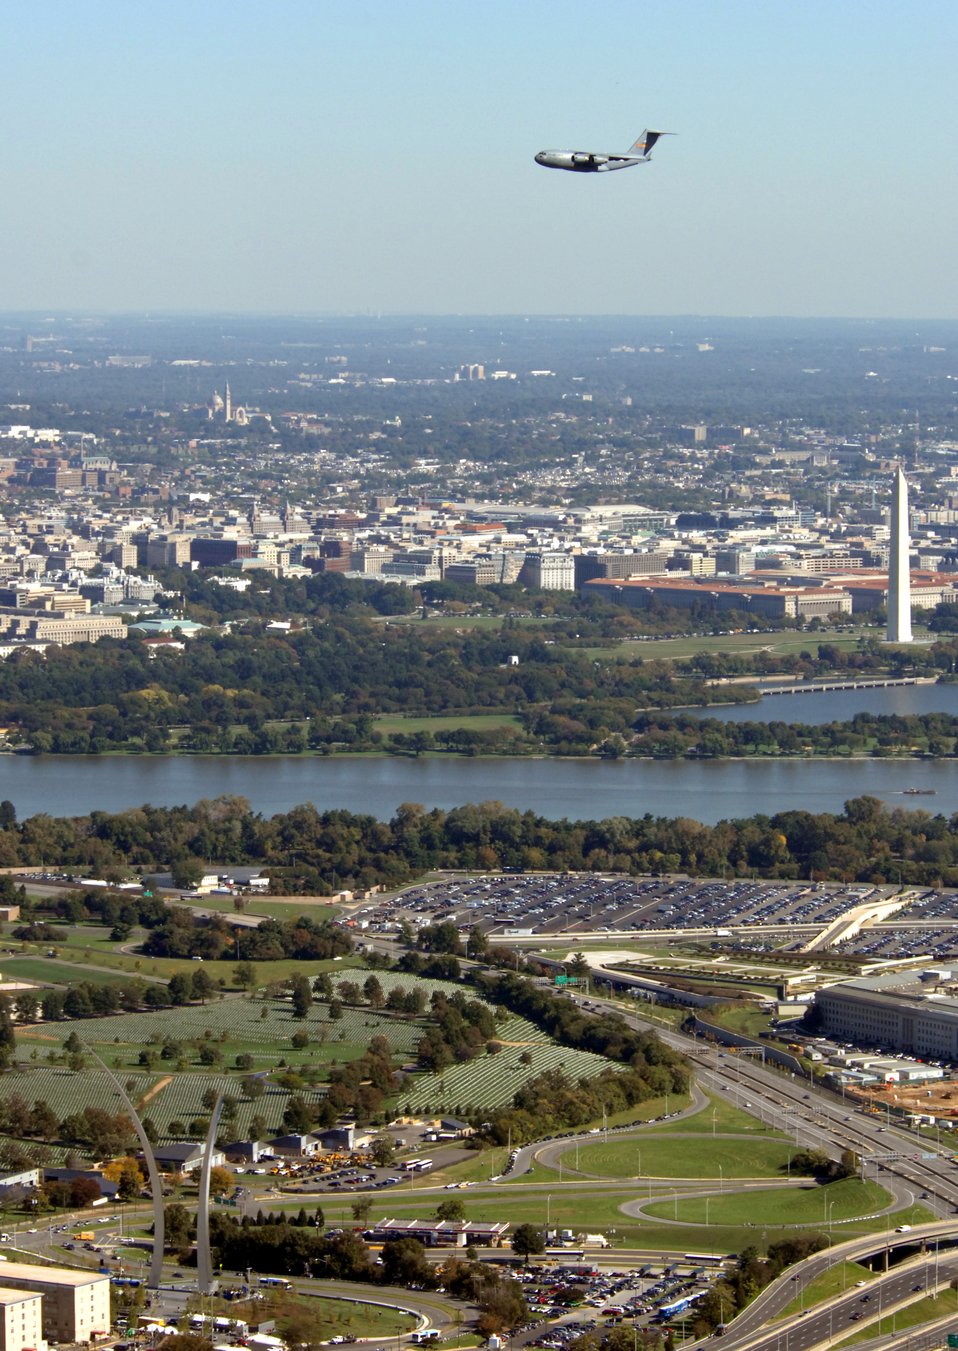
AF Memorial: Warming up for the big show

A C-17 Globemaster II flies over the Air Force Memorial during a practice flight over the Oct. 13 in Arlington, Va. The memorial dedication ceremony will be held Oct. 14. An Air Force open house will be held near the Pentagon in conjunction with the dedication ceremony that will feature performances by the U.S. Air Force Band, the U.S. Air Force Honor Guard drill team, and a concert by country music performer LeeAnn Womack.